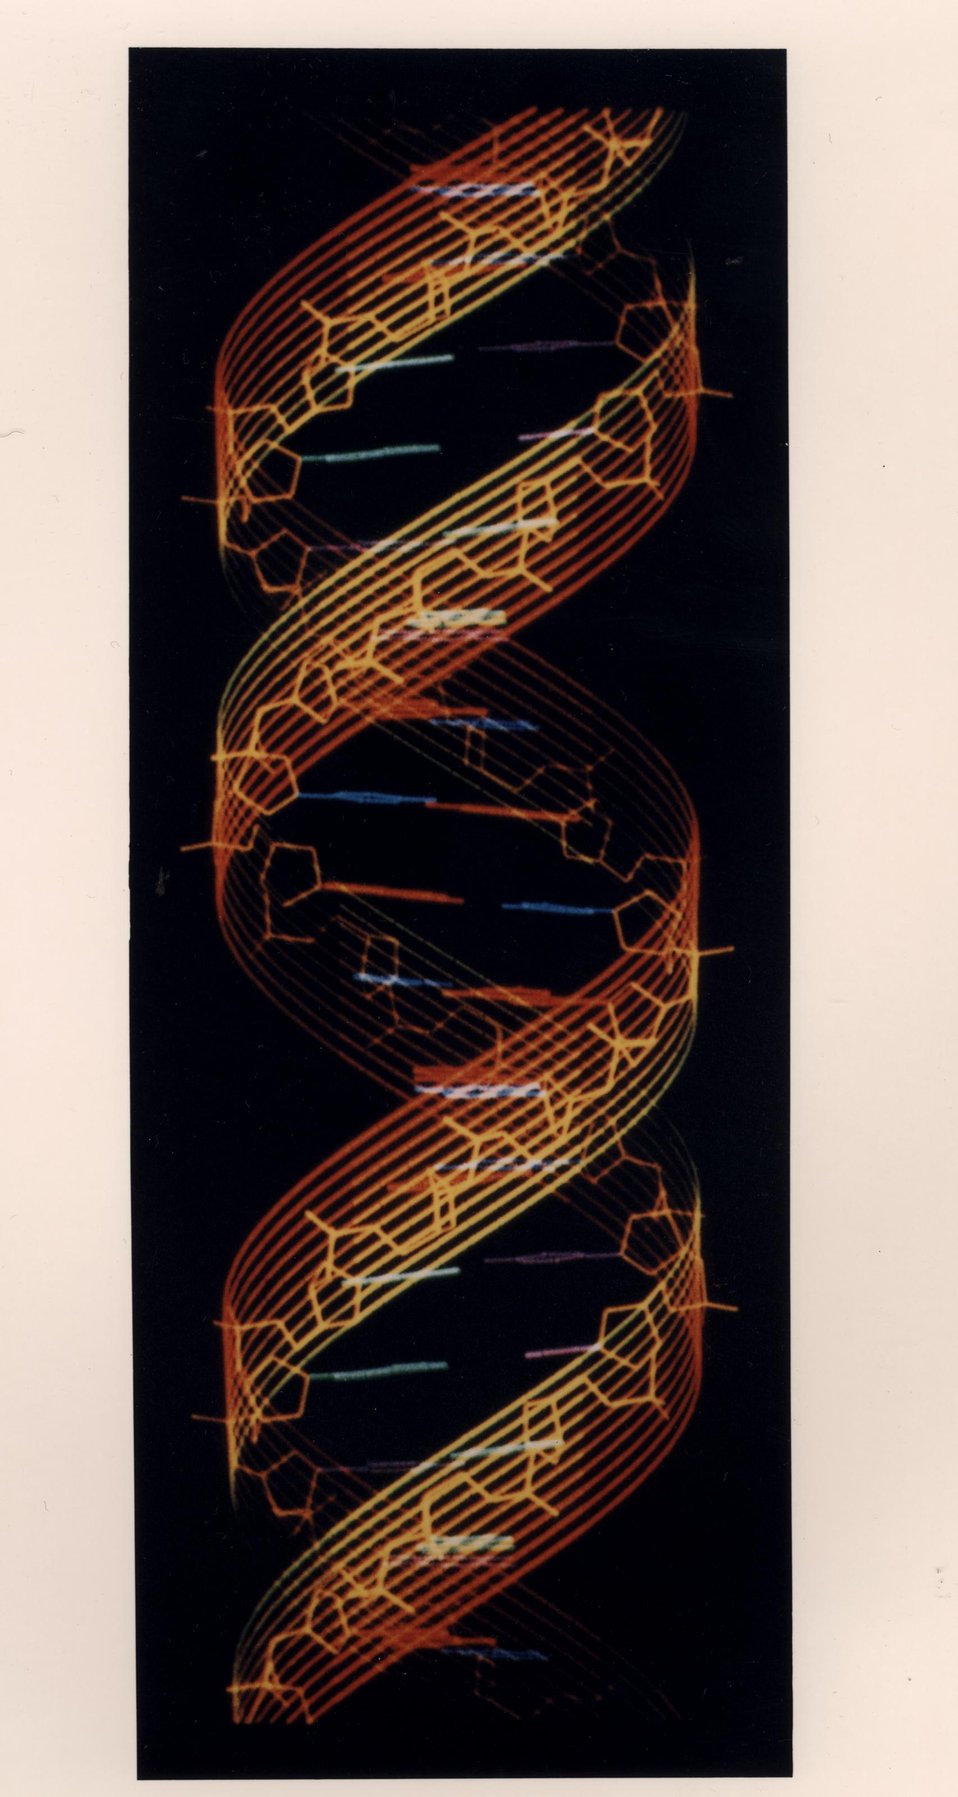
The Structure of the Genetic Script. In the body, DNA usually takes the form of a highly regular double-stranded helix, shown here in a computer-generated reconstruction.